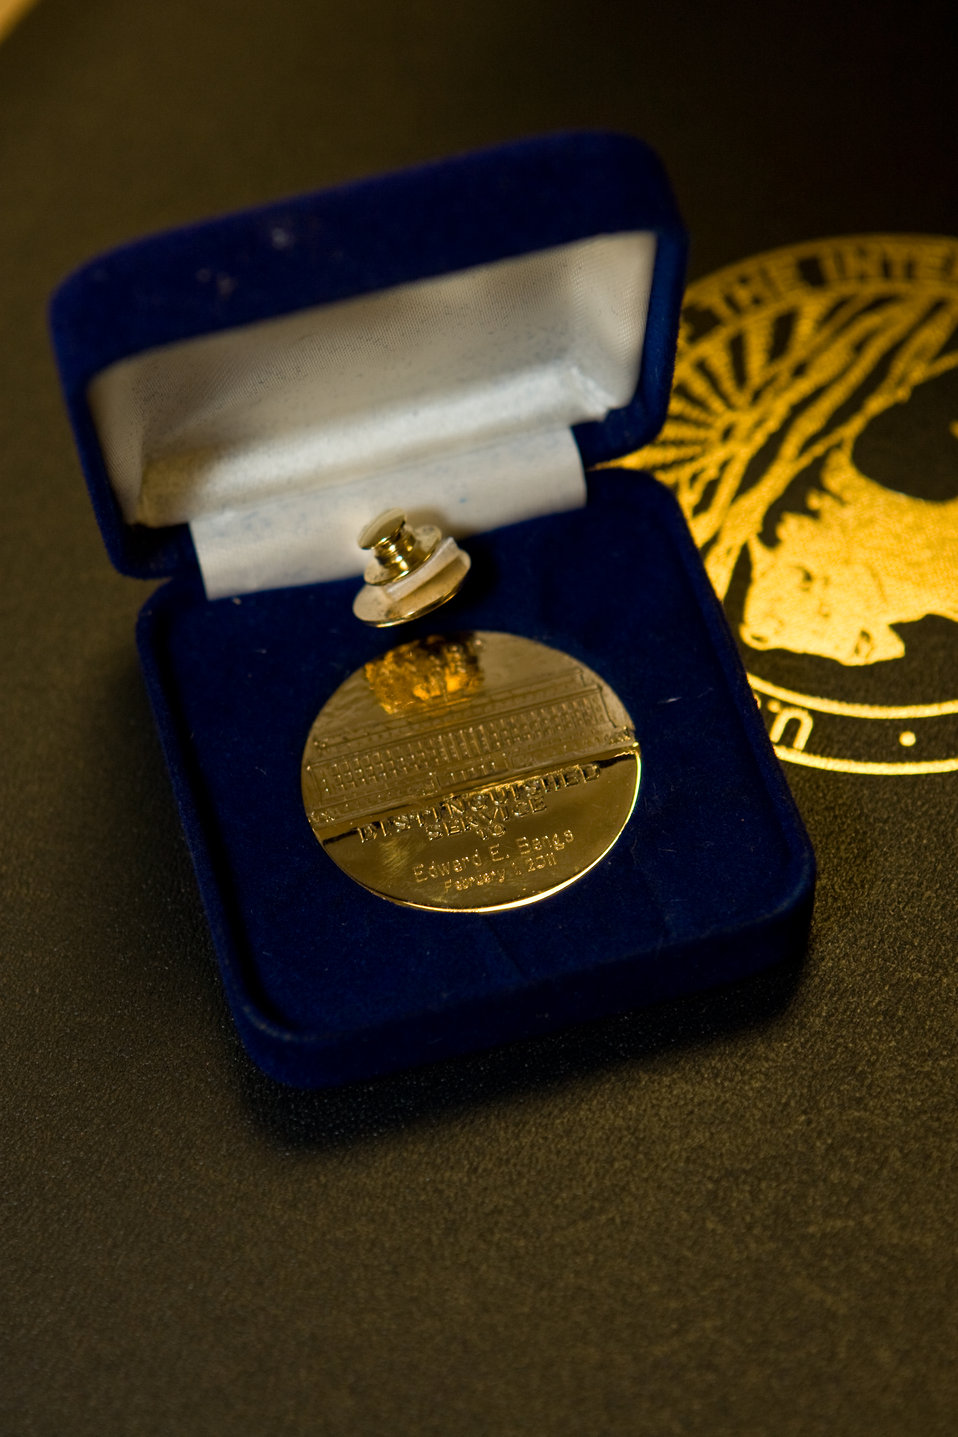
Medal of Honor

On May 23rd, 2011 The U.S. Fish and Wildlife Service Mountain-Prairie Region honored three of the most influential individuals in wolf recovery in the Northern Rocky Mountains: Ed Bangs, Steve Fritts, and Margot Zallen. Ed Bangs started the event with an hour-long presentation, “Wolf Conservation: The Good, The Bad, and The Ugly.”

Following the presentation, Regional and National leadership recognized the imminent retirement of Ed, Steve, and Margot with a variety awards for their contributions.